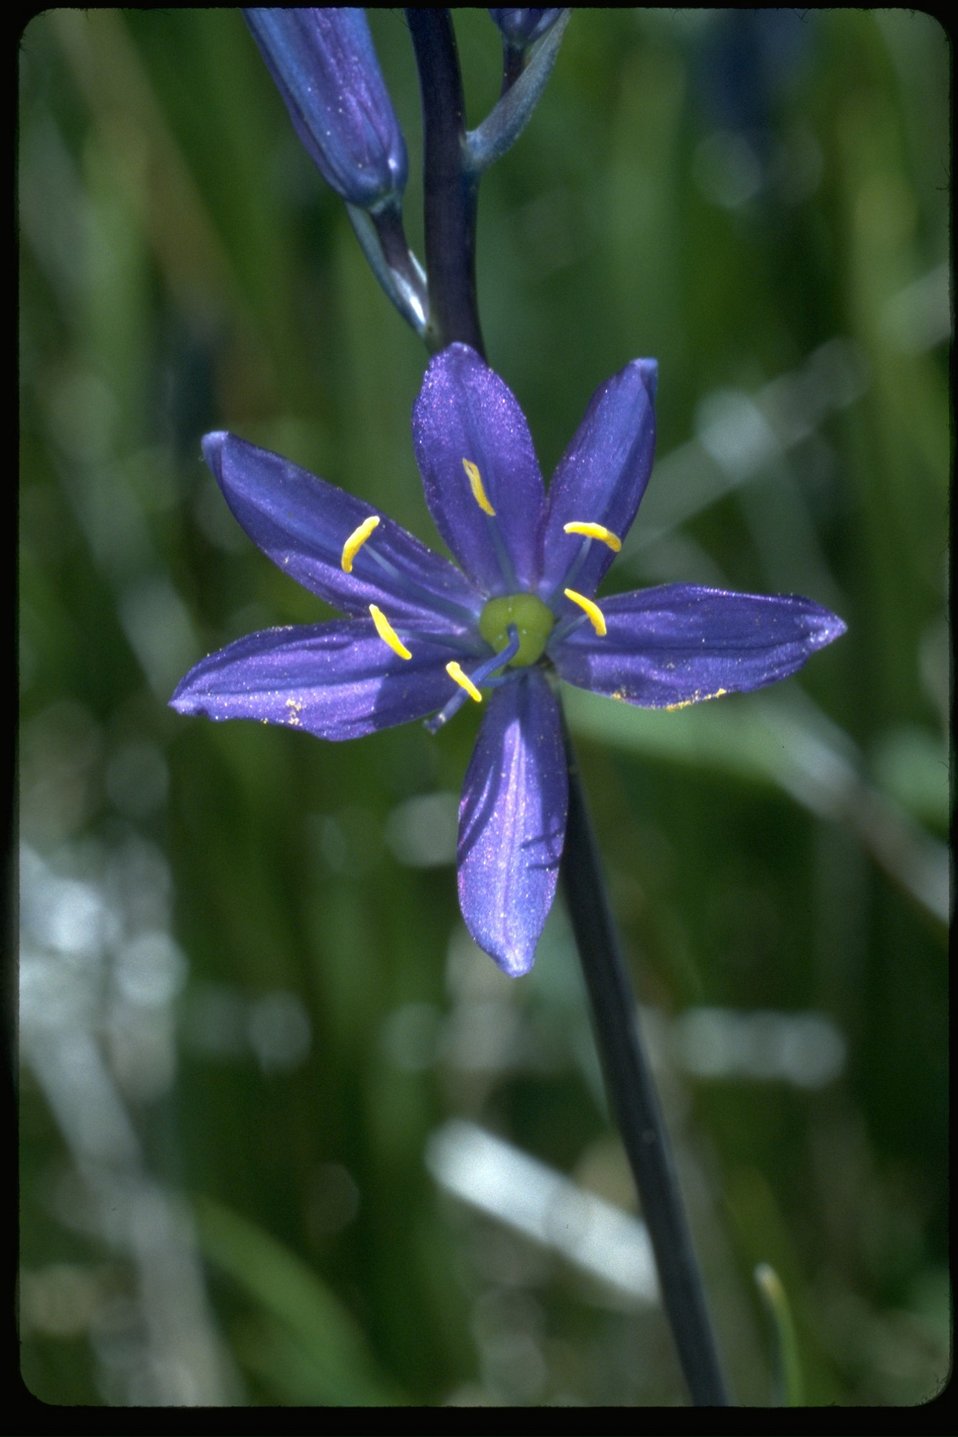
Medium shot of Camas wildflower.